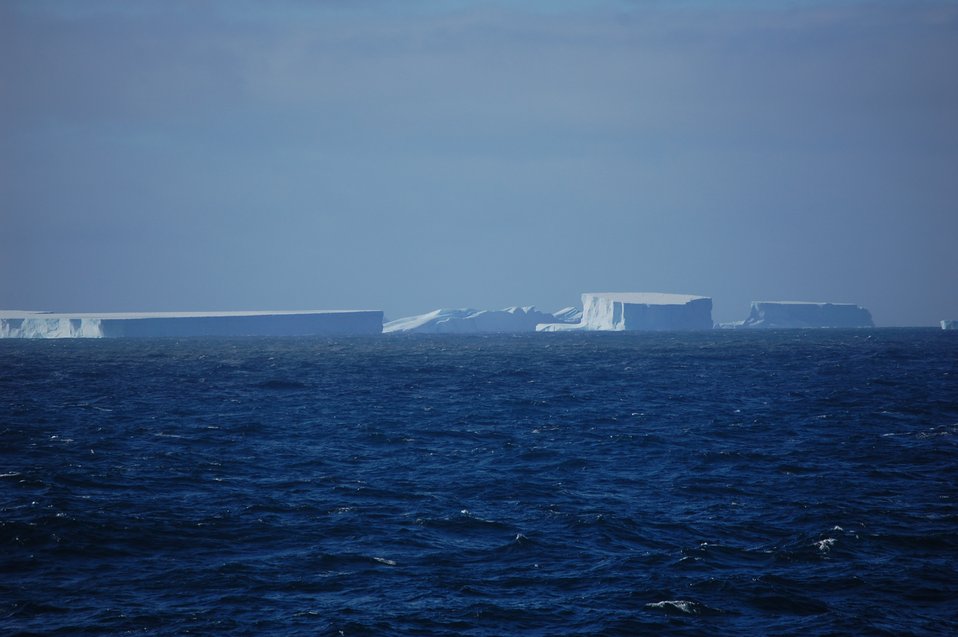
Icebergs